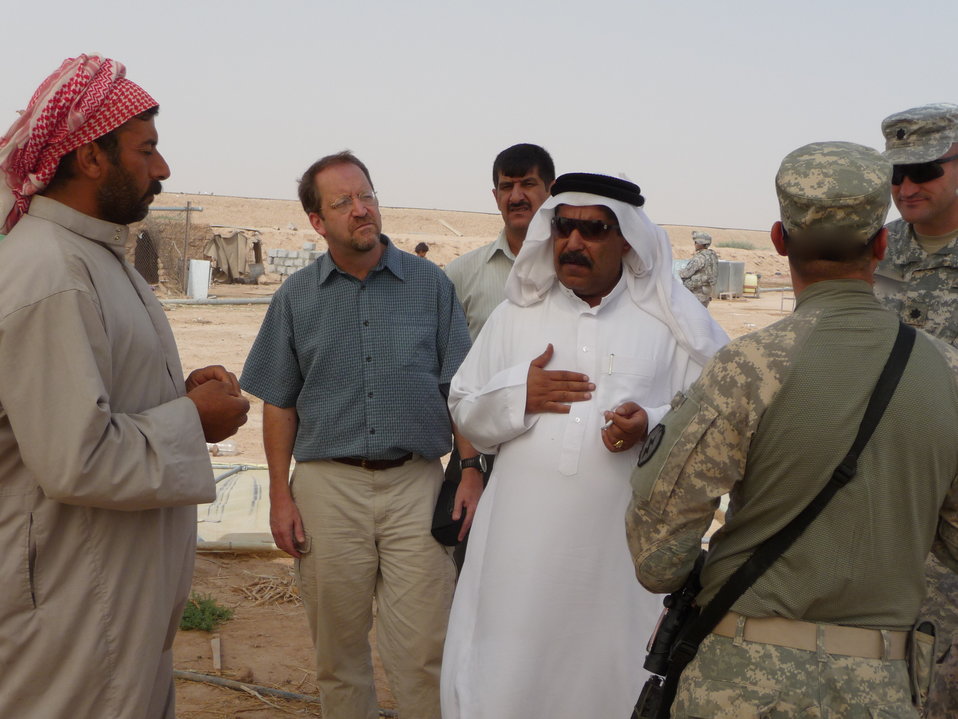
PRT Salah Ad Din Dunham Speaks With Agricultural Leaders

John Dunham of PRT Salah Ad Din with Salah Ad Din Director General for Agriculture speak outside of Tikrit, Iraq, September 2009.